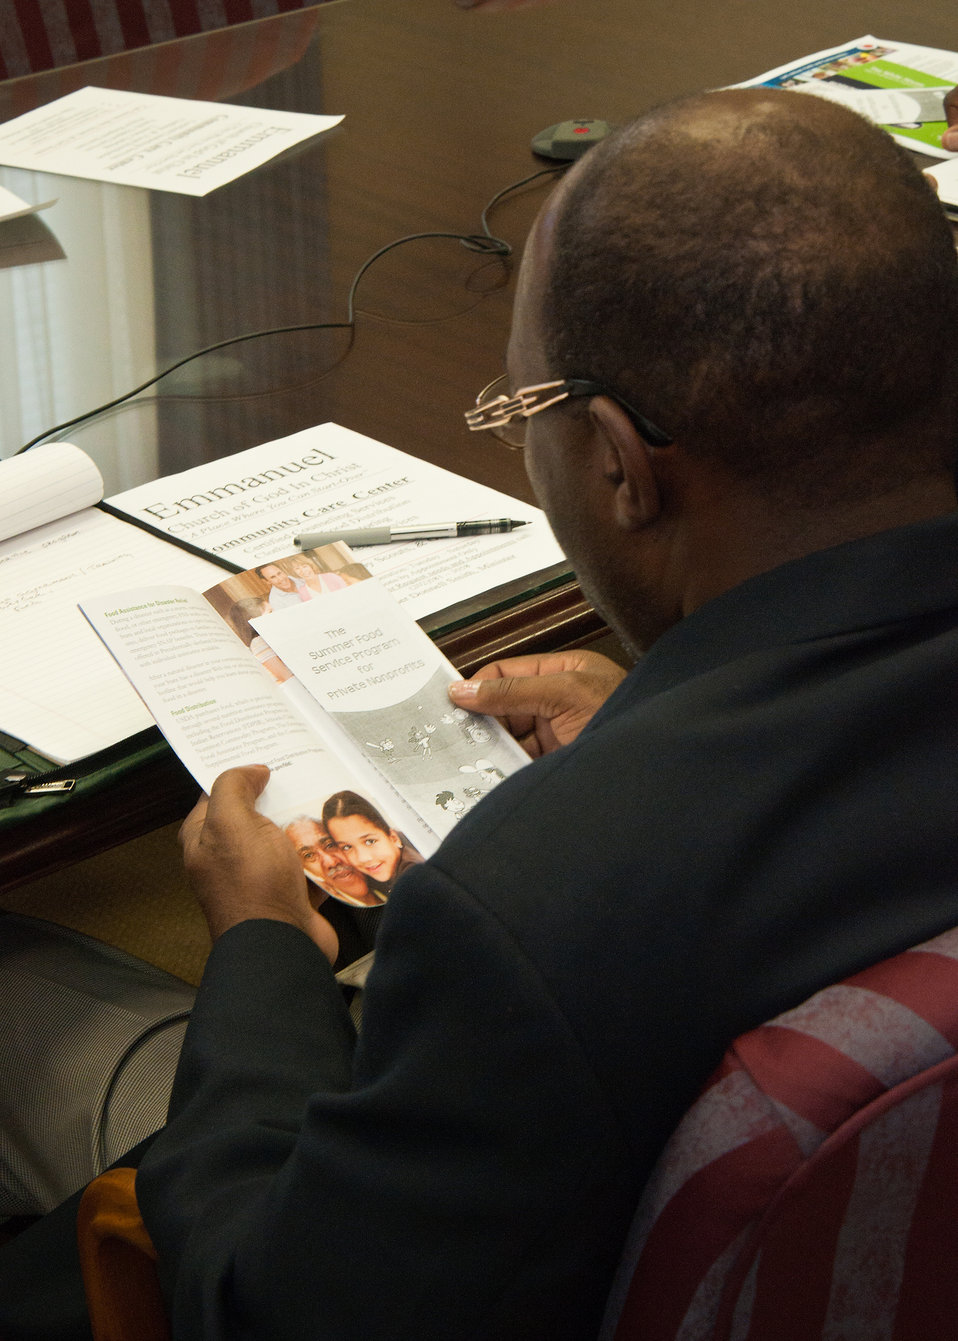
Pastor Dwayne E. Jones, Spread the News, Church of God in Christ, Temple Hills, Maryland reviews information on the Summer Food Service Program at a Summer Food Service Program Webinar Watch Party. The event was hosted by the Center for Faith Based and Neighborhood Partnership at the United States Department of Agriculture (USDA), on Friday, May 13, 2011. The SFSP is the single largest Federal resource available and created by the USDA Food and Nutrition Service for local sponsors who want to combine a feeding program with a summer activity program. Jones a USDA employee attended the webinar to gain information to increase the involvement his church has in feeding programs for children.